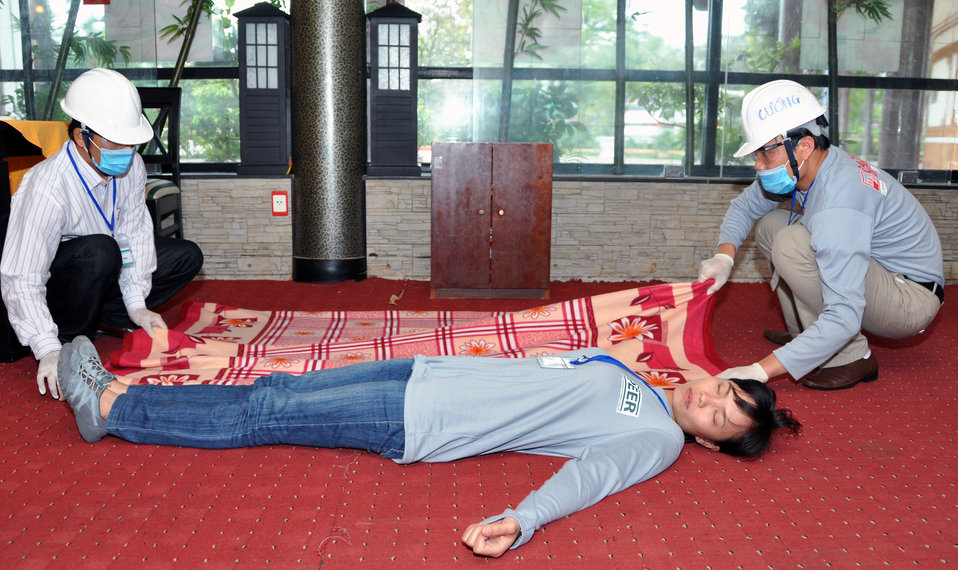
Disaster and Emergency Training Funded by USAID in Hue, Vietnam